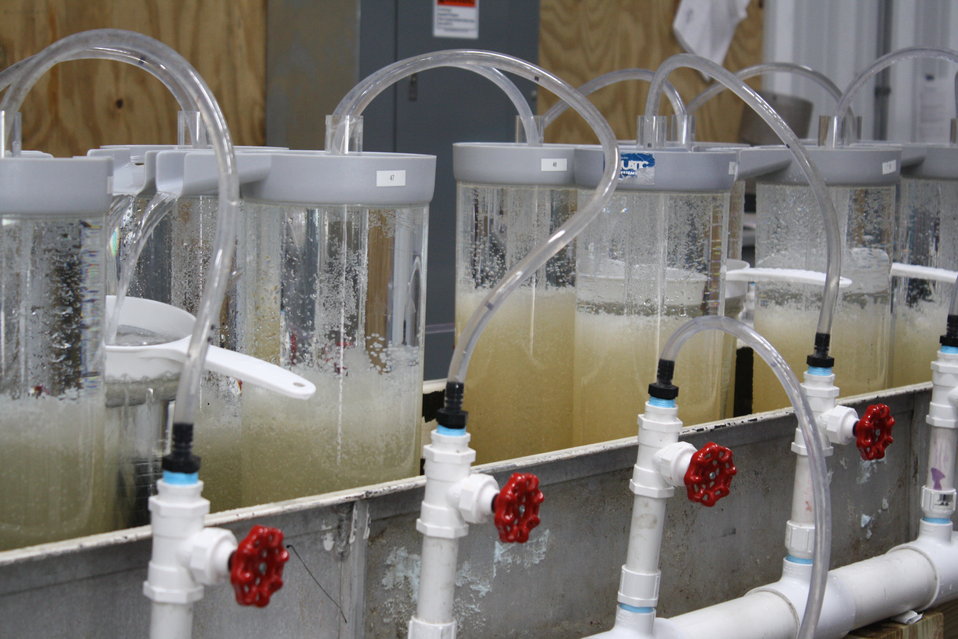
Nashua National Fish Hatchery welcomes regional office employees

Viewing equipment to separate healthy shad eggs from non-fertile eggs.